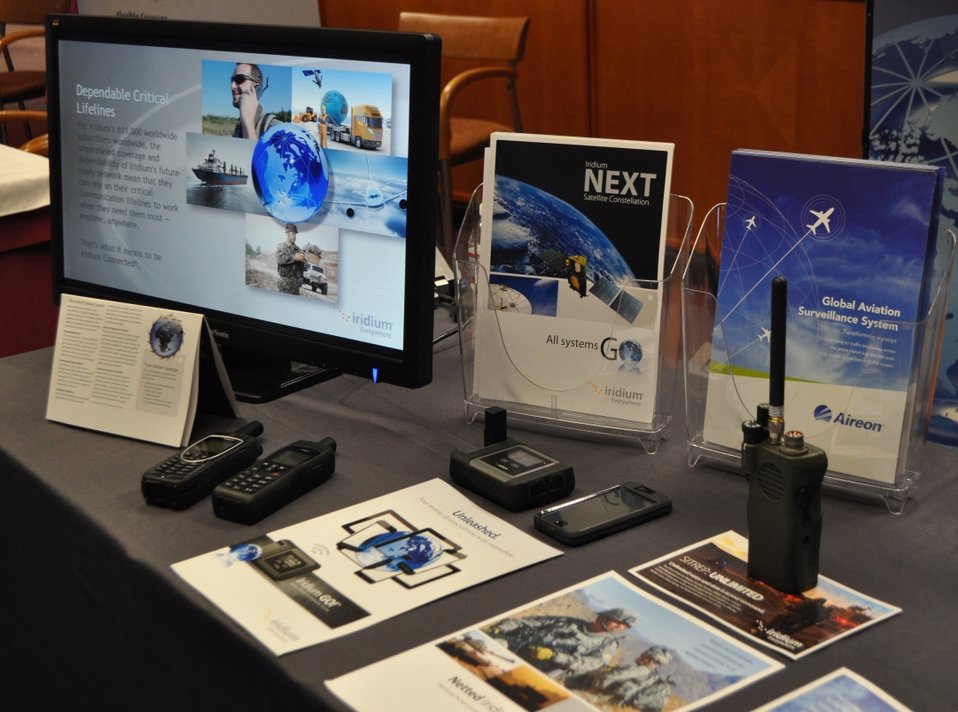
5.14.2014 Satellite Technology Demonstration

Satellite Technology Demonstration at FCC